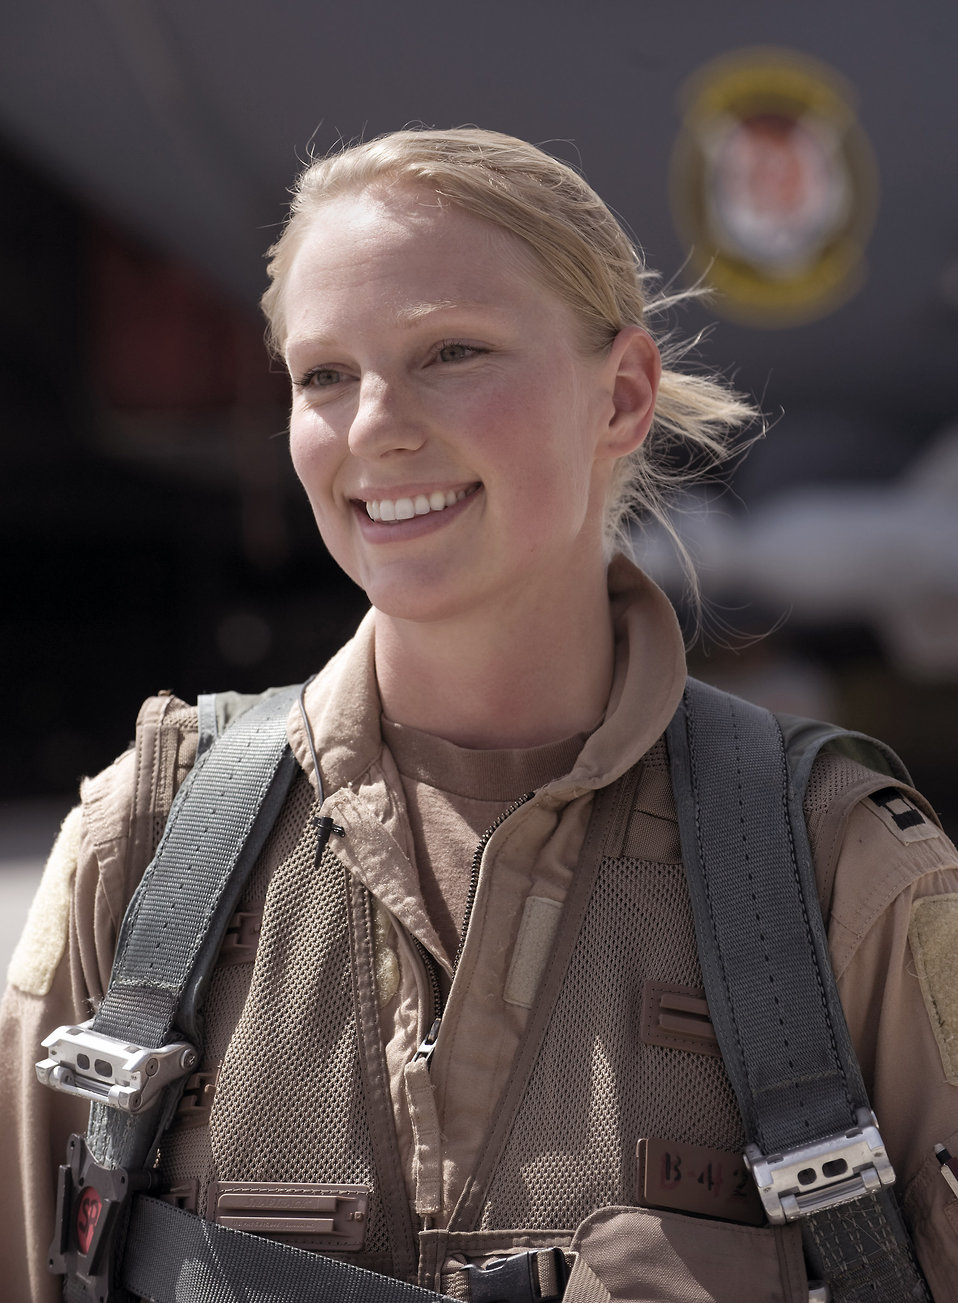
Top cover: Airpower integral to ground force's success

Capt. Vanessa Mahan pauses after returning from a mission Sept. 15 at Bagram Airfield, Afghanistan. Captain Mahan is a F-15E Strike Eagle weapons systems officer deployed to the 455th Air Expeditionary Wing in Afghanistan from Seymour Johnson Air Force Base, N.C. She is from St. John, Ind.